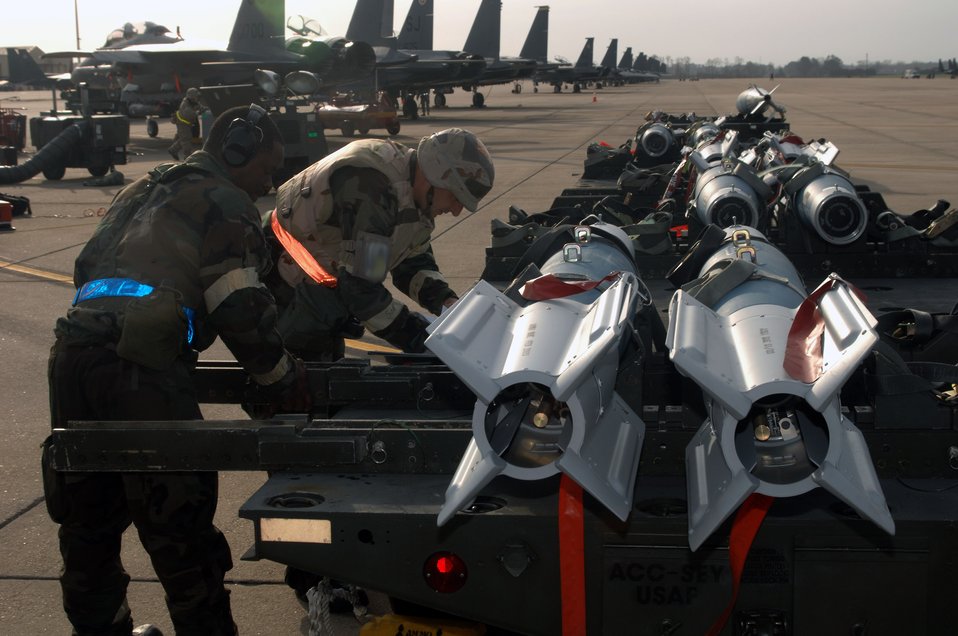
Ready to go

Tech. Sergeant Noal Yarnes and Senior Airman Ryan Morgan check munitions during an operational readiness exercise March 18 at Seymour Johnson Air Force Base, N.C. The exercise evaluated the 4th Fighter Wing's ability to survive and operate, and employ aircraft and resources.